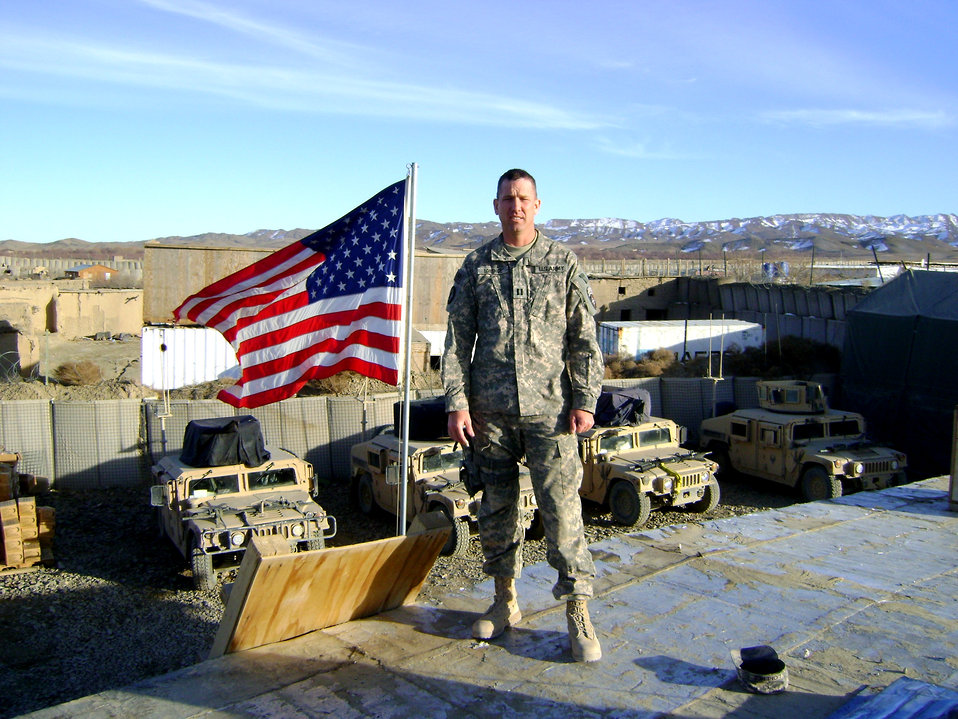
Eric Lorence, Administrative Support Assistant in Region 3, served with the U.S. Army, in Afghanistan.